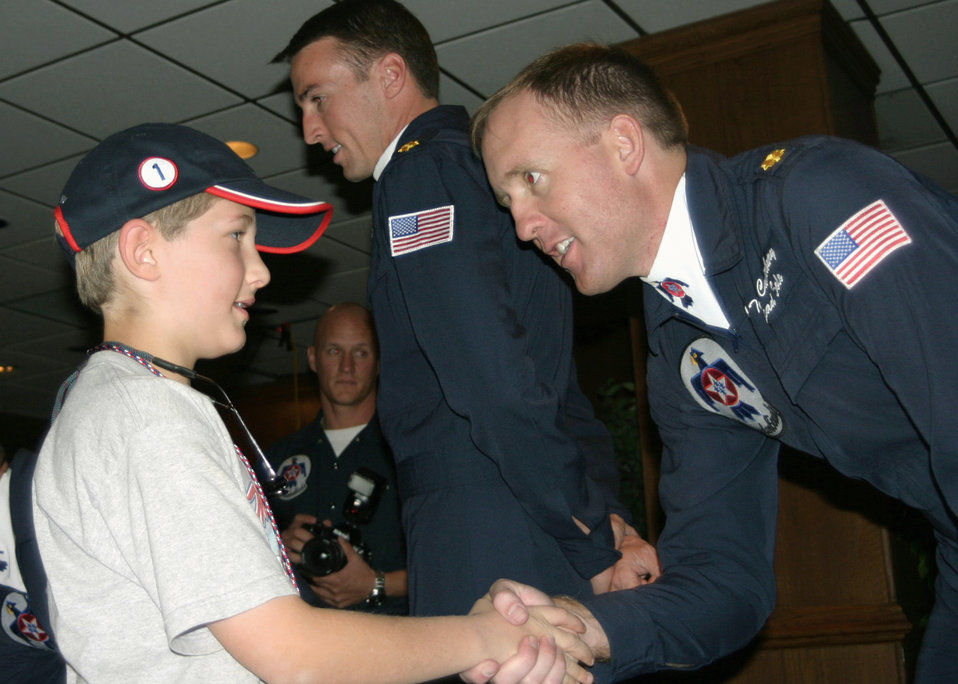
Boy wishes to be Thunderbird for a day

NELLIS AIR FORCE BASE, Nev. -- Buddy LaFontaine meets Maj. Todd Canterbury at the Thunderbird hangar during an air show. Buddy's dream to meet the Thunderbird pilot came true through the Make-A-Wish Foundation. Major Canterbury is the lead solo pilot for the Thunderbirds.